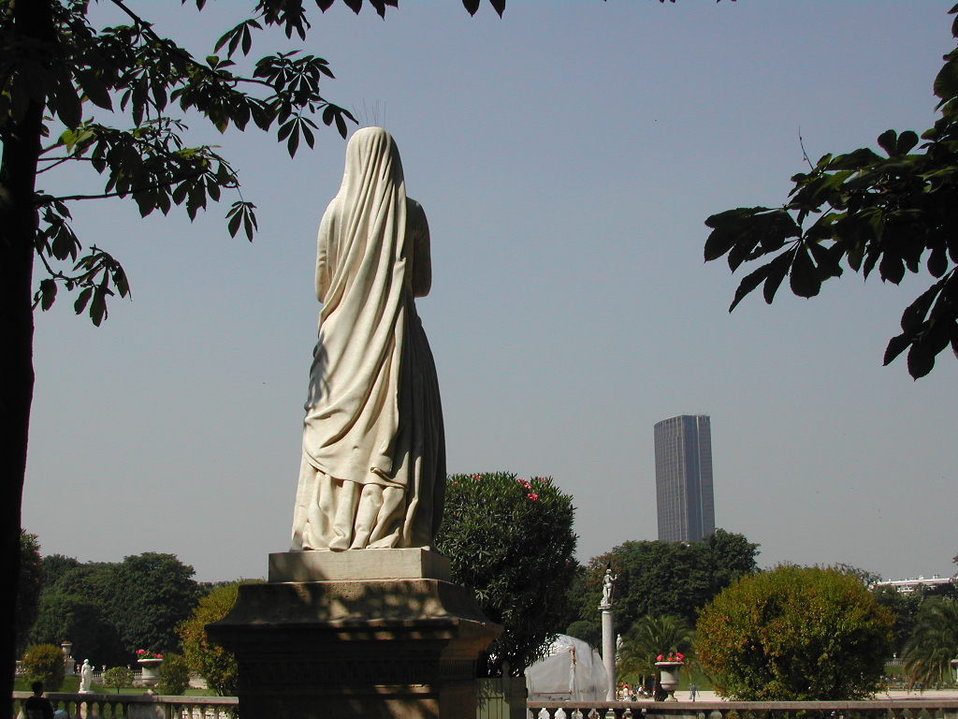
030616 03 Luxembourg